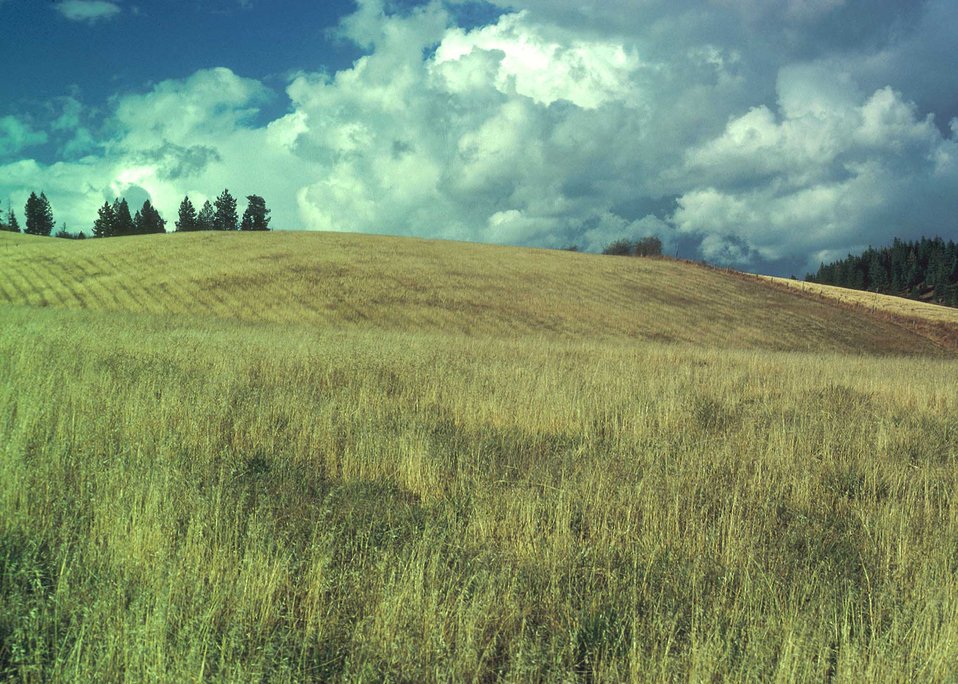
Conservation Reserve Program planting in Clearwater County provides a protective cover on highly erodible land.